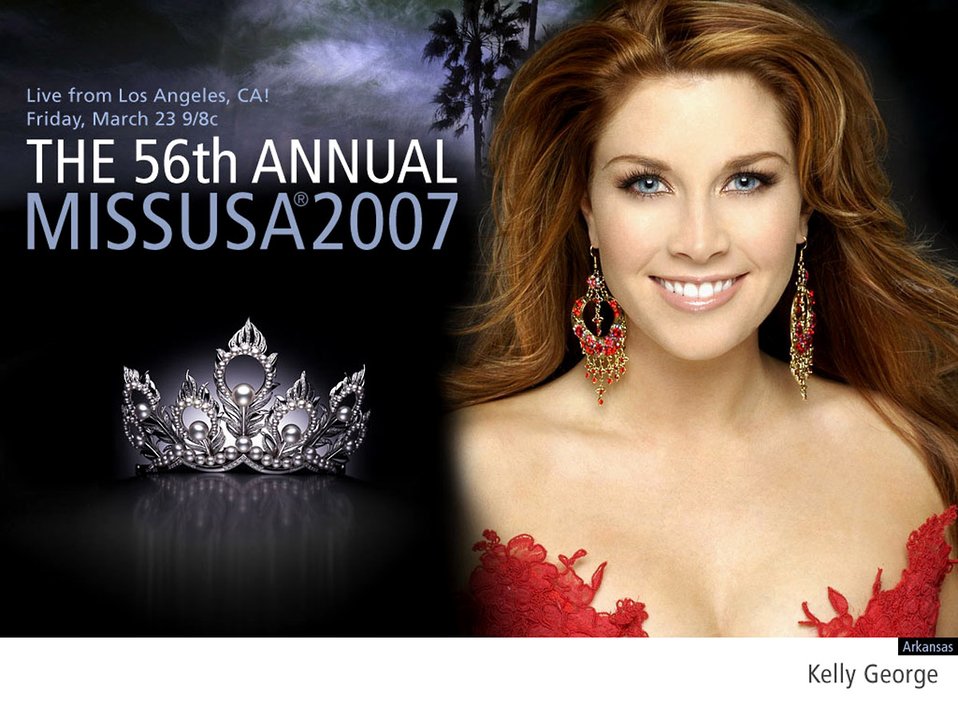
Airman competes for Miss USA crown

Kelly George, a U.S. Air Force 2nd lieutenant and deputy chief of public affairs at Little Rock AFB, Ark., competed March 19 against 50 other women from around the country in the preliminary rounds of the Miss USA contest. The Miss USA contest will air live on NBC March 23.